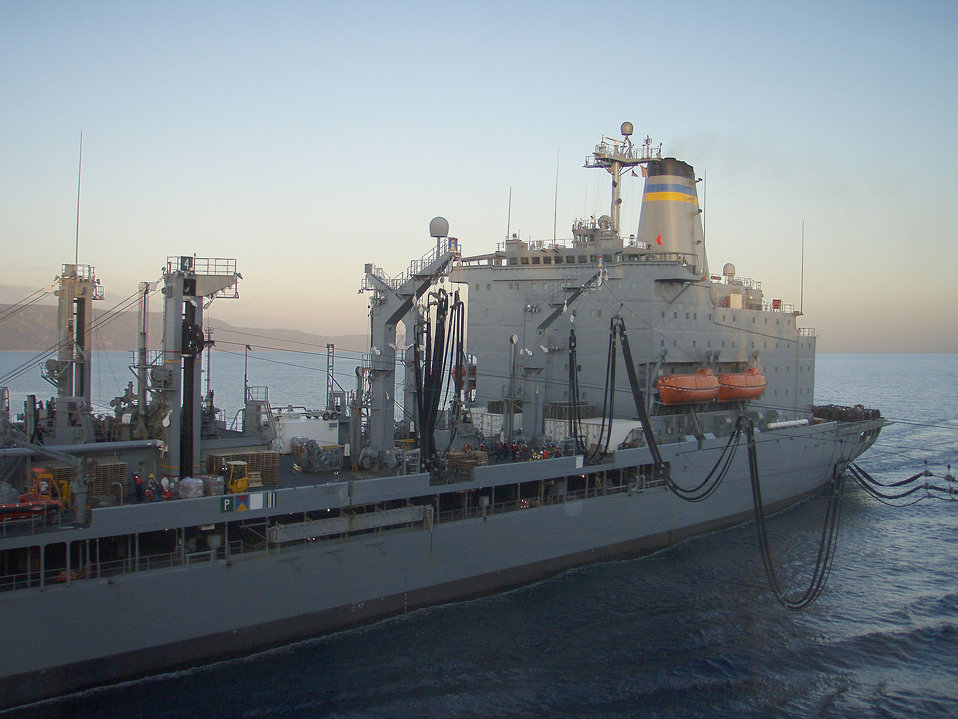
Photographed by U.S. Public Health Service (USPHS) Lt. Cmdr. Gary Brunette this image depicts what was a supply ship, which had pulled alongside the aircraft carrier, USS Bataan, during Caribbean Operation Unified Response. Cmdr. Brunette and his fellow USPHS corpsmen had been transported to the USS Bataan during this deployment.